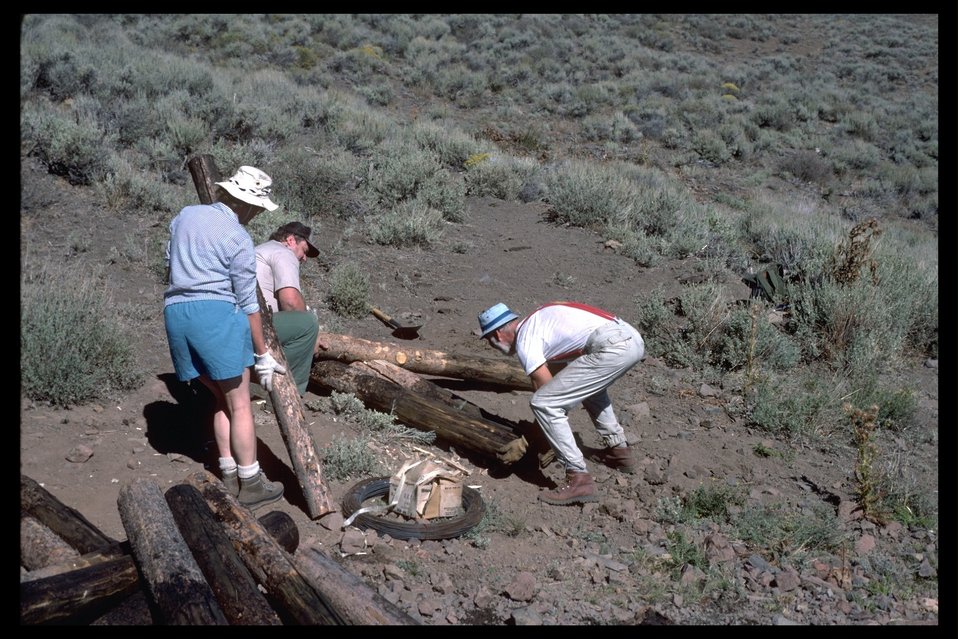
Pueblo Mountain WSA volunteer project with the Desert Train Association on top of Pueblos. (WSA 2-81)